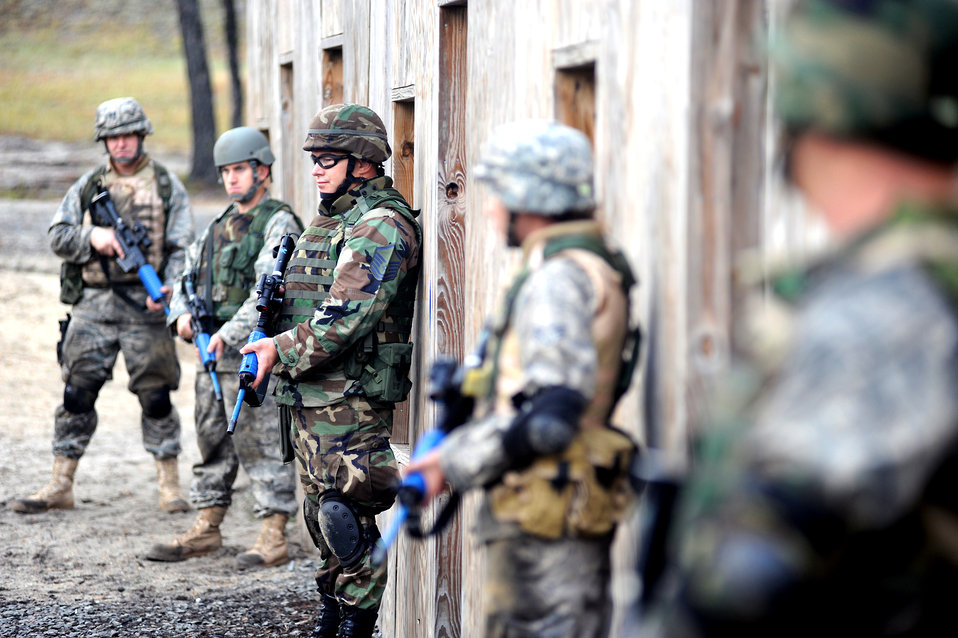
Learning the rules of engagement

Students partcipate in contingency skills basic training during Oct. 1 at Fort Dix, N.J. Air Force legal career field members learned rules of use of force, engagement and expeditionary basics for deployments. The training is held for three days prior to them attending the Advanced Contingency Skills Training Course taught by the Air Force Expeditionary Center's 421st Combat Training Squadron on Fort Dix.